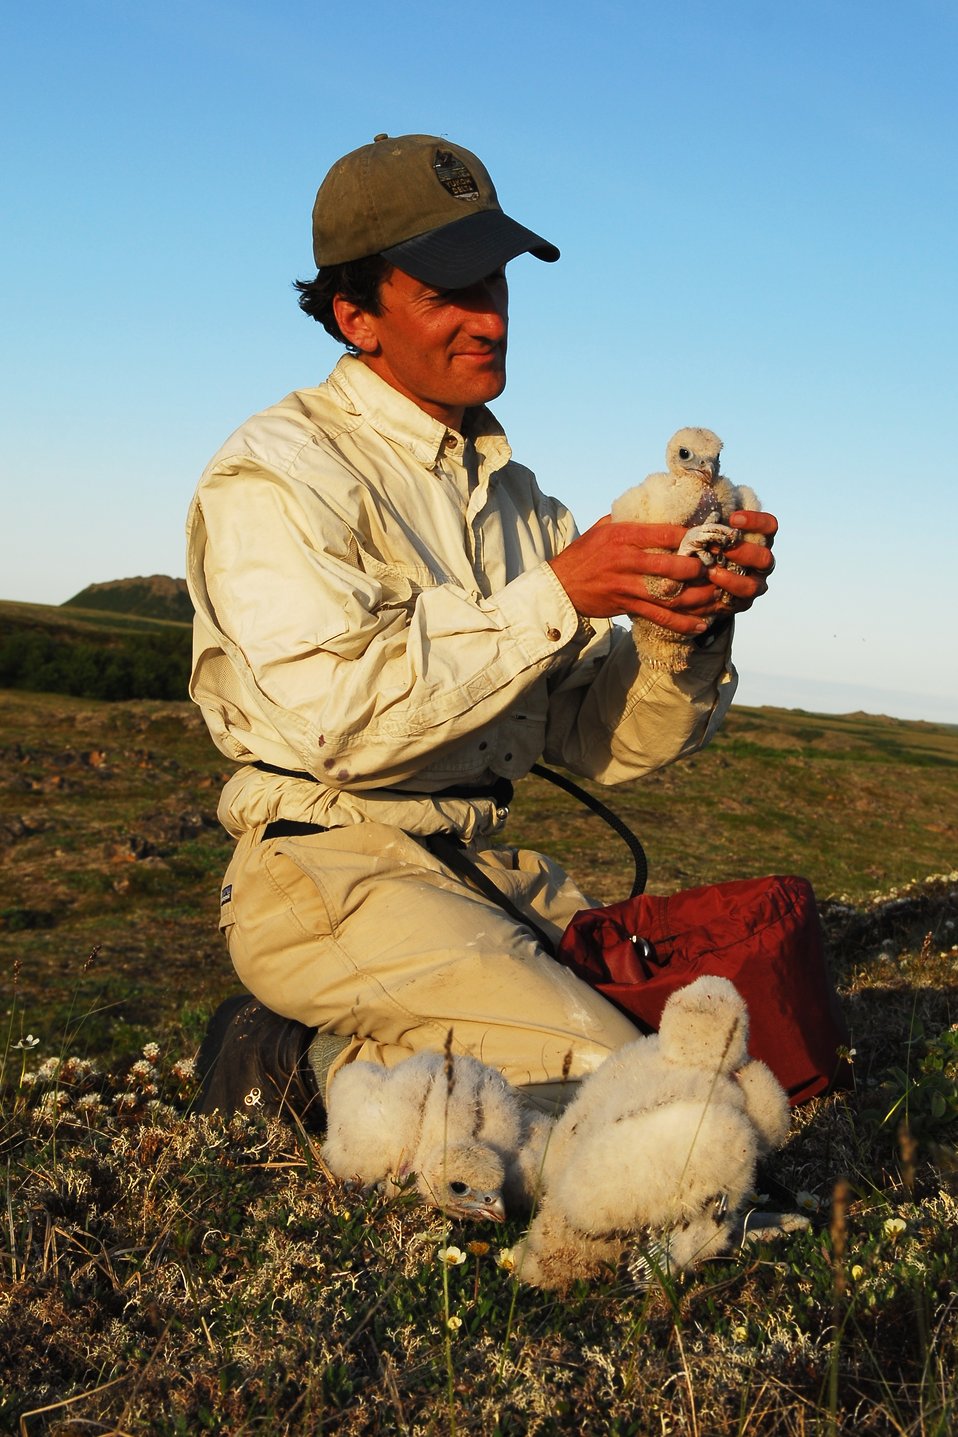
Gyrfalcon nestlings

In 2004 a multi-year research project was initiated investigating Gyrfalcons within the YDNWR.
Researchers banded and collected genetic samples from each nestling that was encountered.

USFWS Yukon Delta NWR